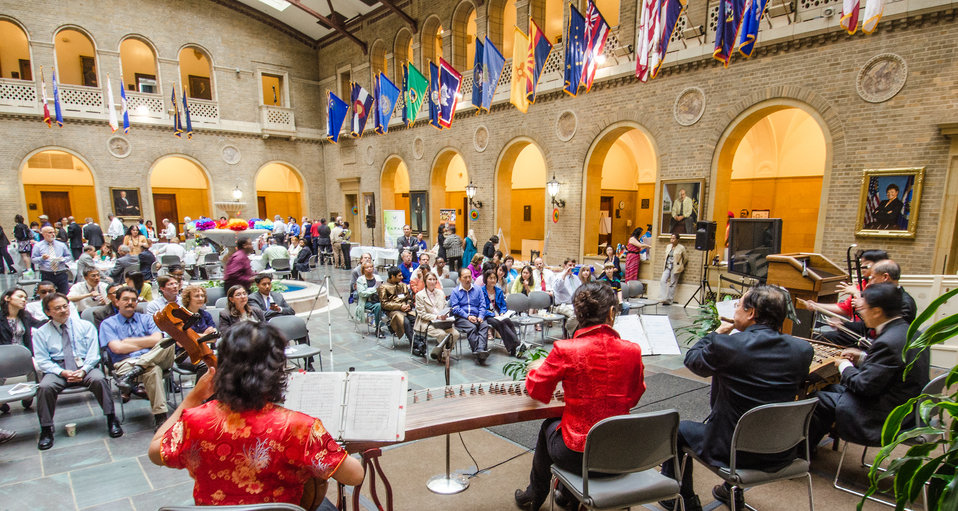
The Washington Chinese Traditional Orchestra Ensemble performs 'Joys of Beaming,' during the U.S. Department of Agriculture (USDA), Asian Pacific American Heritage Month Observance, at the USDA headquarters, Whitten Building patio, in Washington, D.C., on Thursday, May 23, 2013. This year’s theme is “Building leadership; Embracing the Cultural Values and Inclusions.”